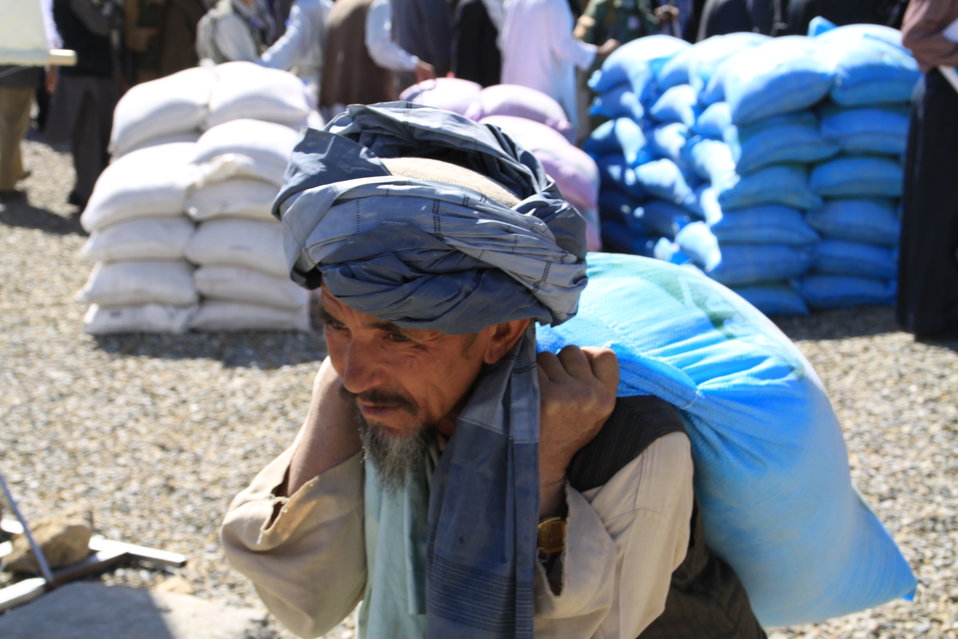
AVIPA Plus Wheat Seed Distribution 101005

US Ambassador Karl Eikenberry and USAID Acting Mission Director Kevin Brownawell joined the Minister of Agriculture, Irrigation and Livestock, H.E. Minister Mohammed Rahimi in signing a Memorandum of Understanding and distributing vouchers to area farmers for wheat and fertilizer.

US Ambassador Karl Eikenberry and USAID Acting Mission Director Kevin Brownawell joined the Minister of Agriculture, Irrigation and Livestock, H.E. Minister Mohammed Rahimi in signing a Memorandum of Understanding and distributing vouchers to area farmers for wheat and fertilizer.

US Ambassador Karl Eikenberry and USAID Acting Mission Director Kevin Brownawell joined the Minister of Agriculture, Irrigation and Livestock, H.E. Minister Mohammed Rahimi in signing a Memorandum of Understanding and distributing vouchers to area farmers for wheat and fertilizer.